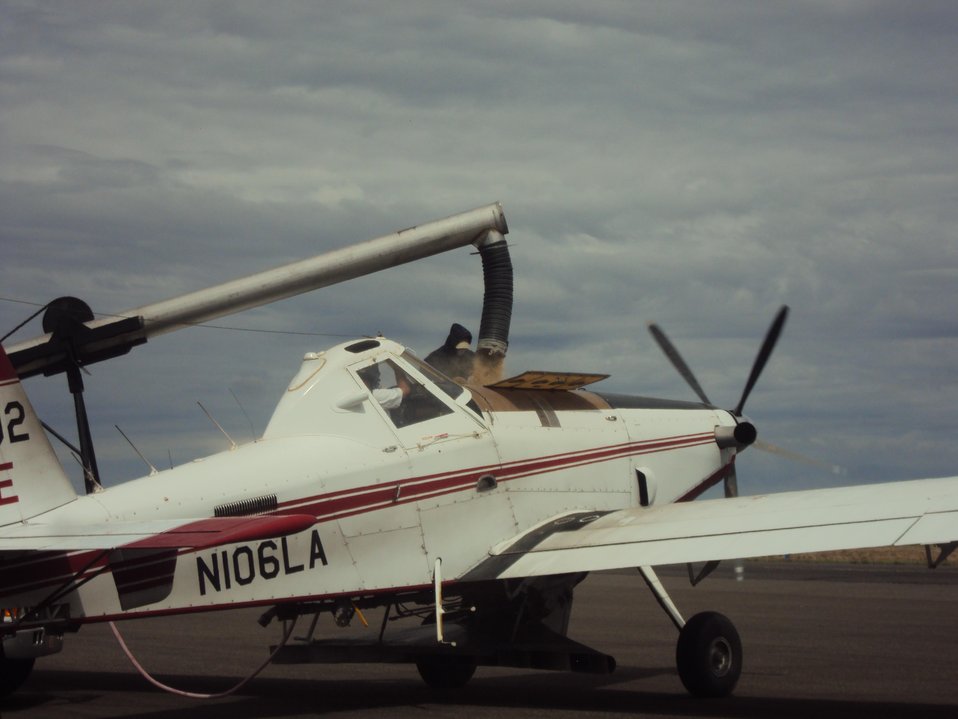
Seed is loaded into the Air Tractor for aerial seeding of severe burned areas of the Silver Fire. The Silver Post Fire response has the Burned Area Emergency Response (BAER) team beginning operations to seed acres of high burn severity and to mulch additional acres. Seeding reduces effects to downstream life, property, and infrastructure by reducing erosion and runoff. Areas of high burn severity are to be seeded with a quick germinating, non-persistent annual cereal barley that would provide rapid ground cover. A small percentage of native perennial species would also be included to give the burned area a jump start in natural recovery, and provide for long-term ground cover. Mulch is the most effective treatment for controlling erosion and runoff, as it provides immediate ground cover. Mulch also assists in stabilizing soil in and around these areas. Aircraft for seeding operations will be based at the Gila National Forest Air Tanker Base.